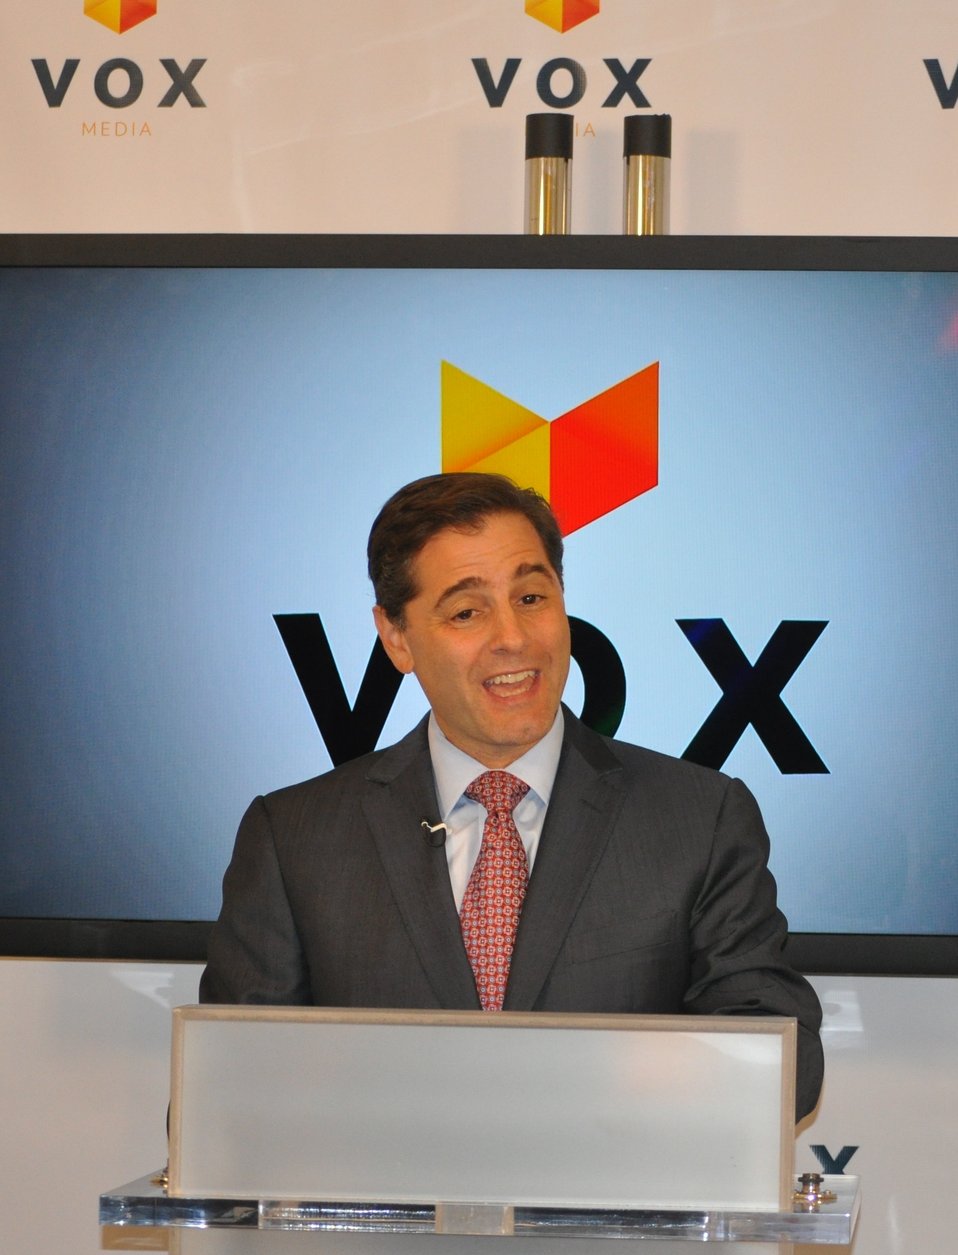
Broadband Challenges and Opportunities, at Vox Media - DSC 0696